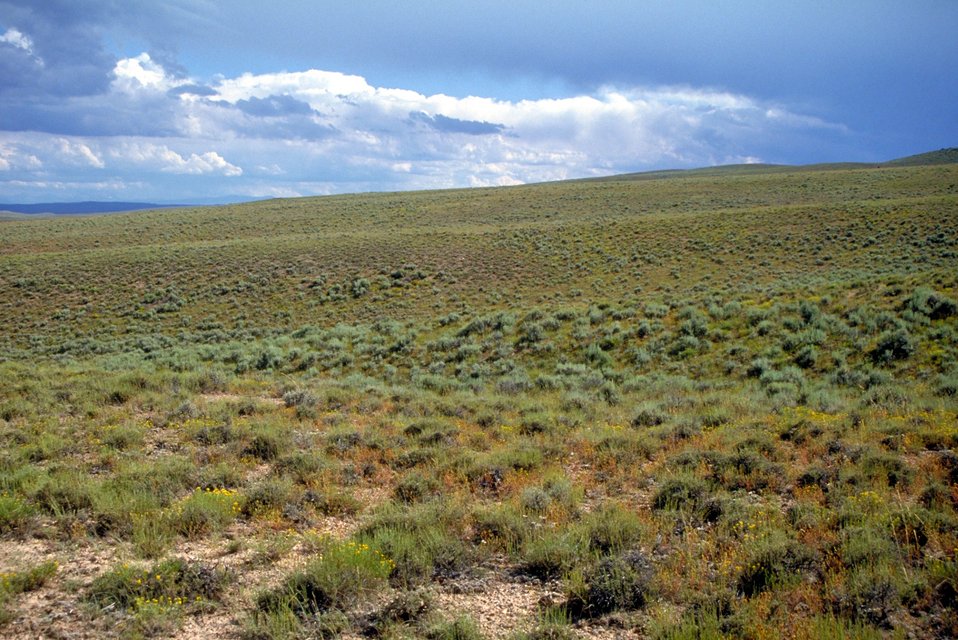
Rangelands in Northern Utah.